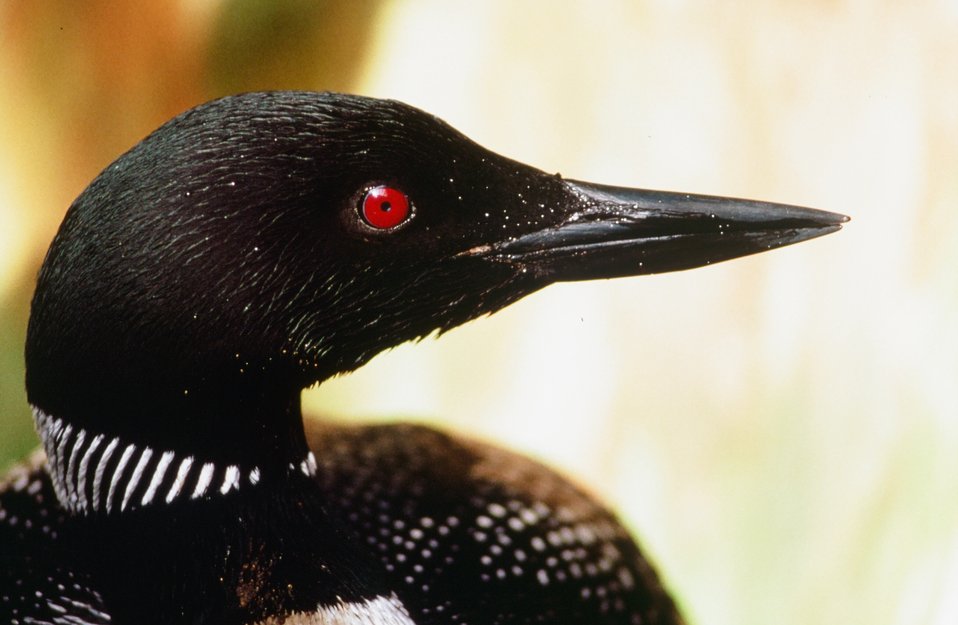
Common loon

The common loon is well known for its ability to dive in the water to catch its food.